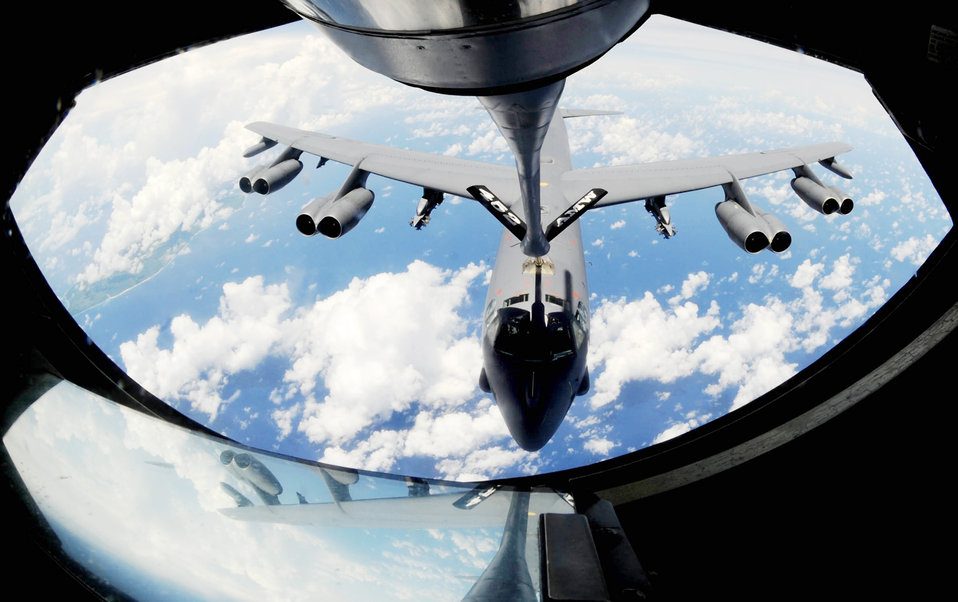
Ready for fuel

A B-52 Stratofortress approaches the boom of a KC-135 Stratotanker over the Pacific Ocean Aug. 14, 2009. The bomber is taking part in the 2009 Inaugural Turkey Shoot with KC-135s and F-22 Raptors. The event allows air expeditionary units to plan and execute tactical missions with airframes that don't regularly train together.